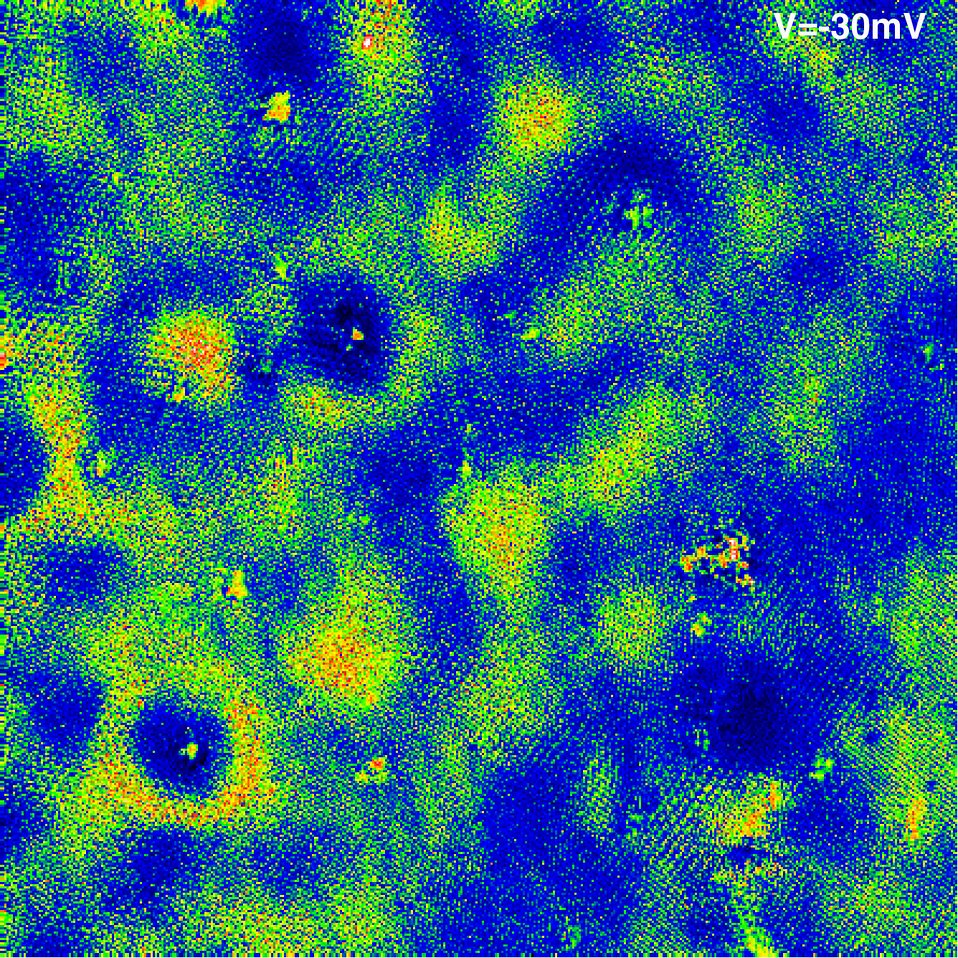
Speed Bumps Less Important Than Potholes for Graphene

Comparison of an STM topographic image of a section of graphene sheet (top left) with spectroscopy images of electron interference at three different energies shows strong interference patterns generated by atomic scale defects in the graphene crystal (red arrows) but only modest disturbances caused by larger scale bumps in the sheet (blue arrows.) Analysis of the ripples shows that the electron energy in graphene is inversely proportional to its wavelength, just like light waves. The area imaged is approximately 40 nanometers square.